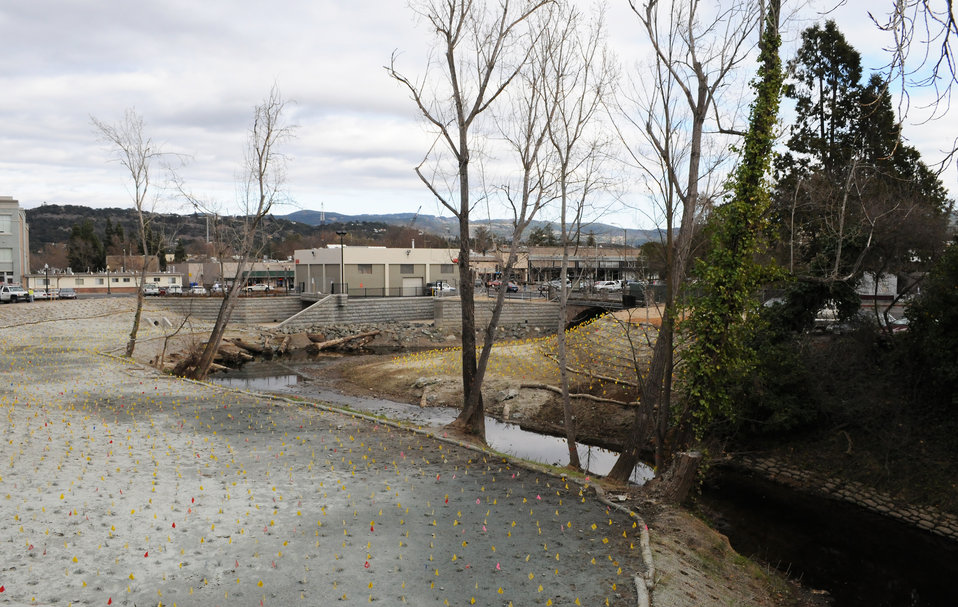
Napa Creek habitat restoration

Flags mark the planned location of native species plantings along the banks of Napa Creek in Napa, Calif., Jan. 18, 2012. The plantings, along with tree trunks placed along the bank, will provide habitat for fish and other river species. The environmental restoration work is part of the $14.8 million Napa Creek Project, funded by the American Recovery and Reinvestment Act of 2009; a joint effort of the U.S. Army Corps of Engineers Sacramento District, the city of Napa, and the Napa Flood Control and Water Conservation District to reduce flood risk for the city. The Corps also widened the creek and is installing box culverts – tunnels large enough for a car to drive through – to channel flood water from the creek more quickly to the Napa River and way from homes and businesses.